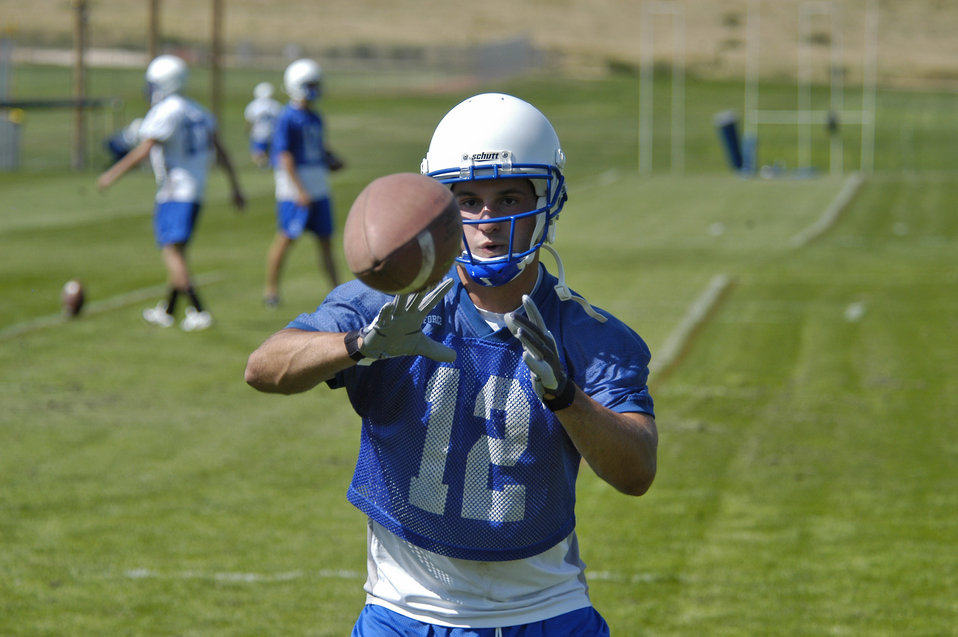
Falcons have everything to prove this football season

Senior wide receiver Mike Moffett focuses during Air Force's season-opening practice Aug. 1 at the Air Force Academy in Colorado Springs, Colo.